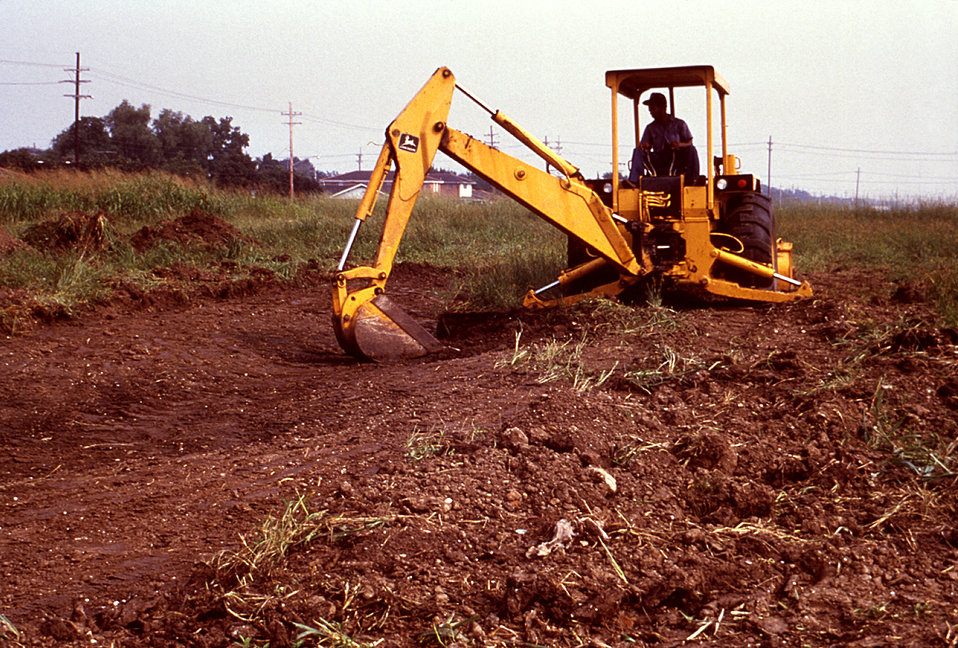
This gasoline-powered back hoe is beginning to excavate a non-draining swale in an area of New Orleans, Louisiana, which happens to be the habitat of a thriving population of Aedes vexans mosquitoes